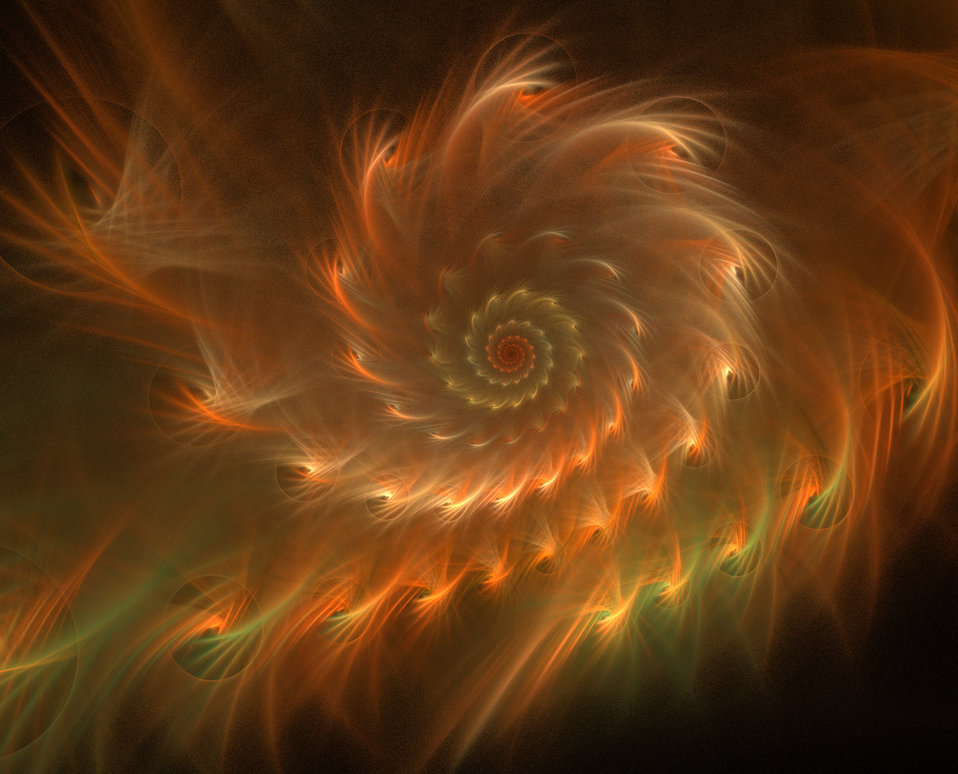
Autumn

Fractal using script in autumn colours with swirls.